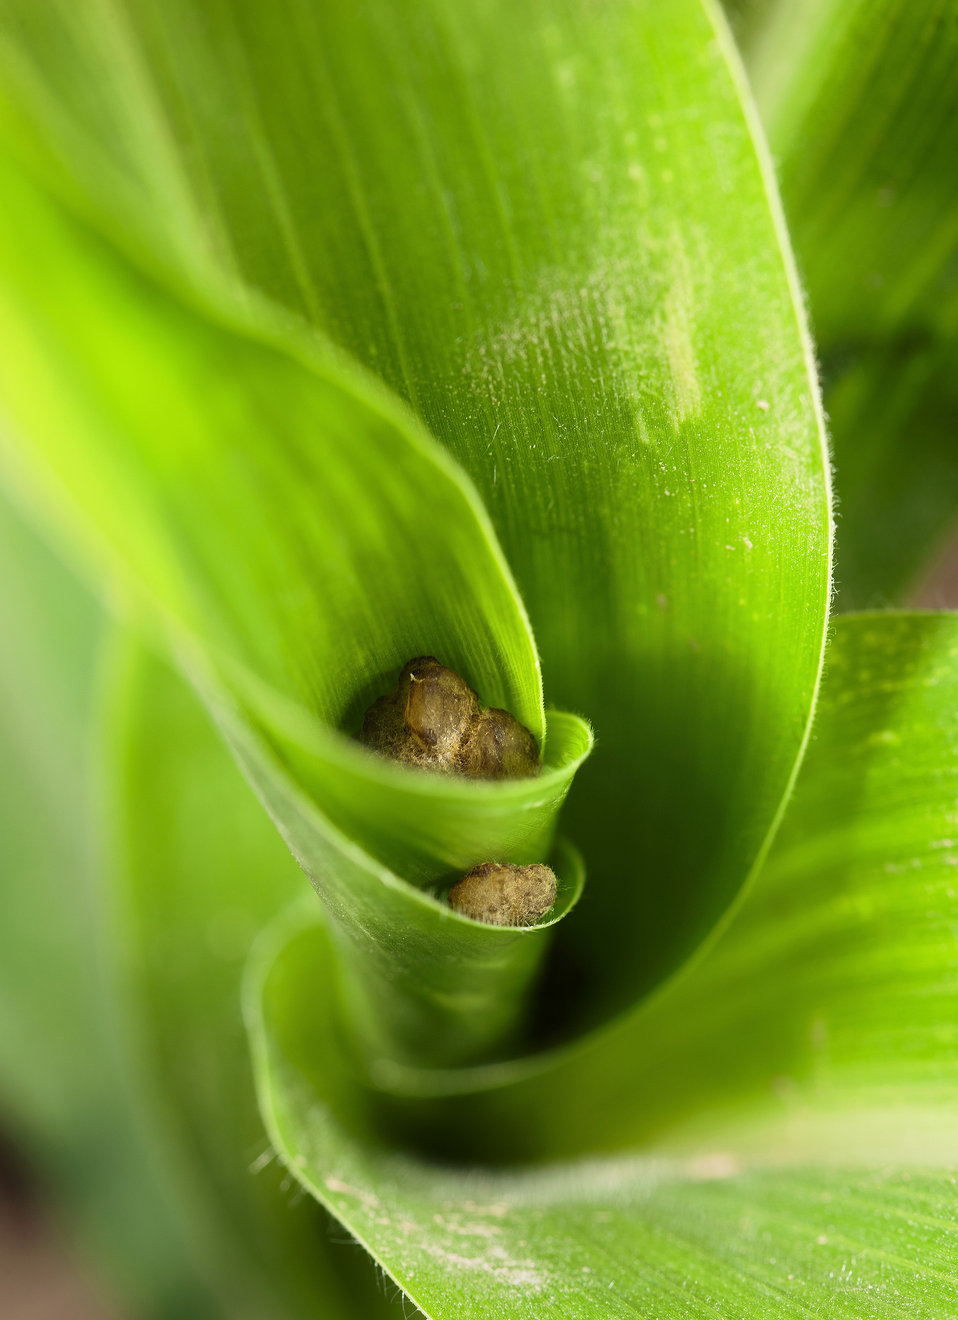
Some of the nontoxigenic A. flavus bioplastic granules end up between the leaves of the developing corn plant on Sept. 21, 2003 following application. Most of the granules fall to the ground.